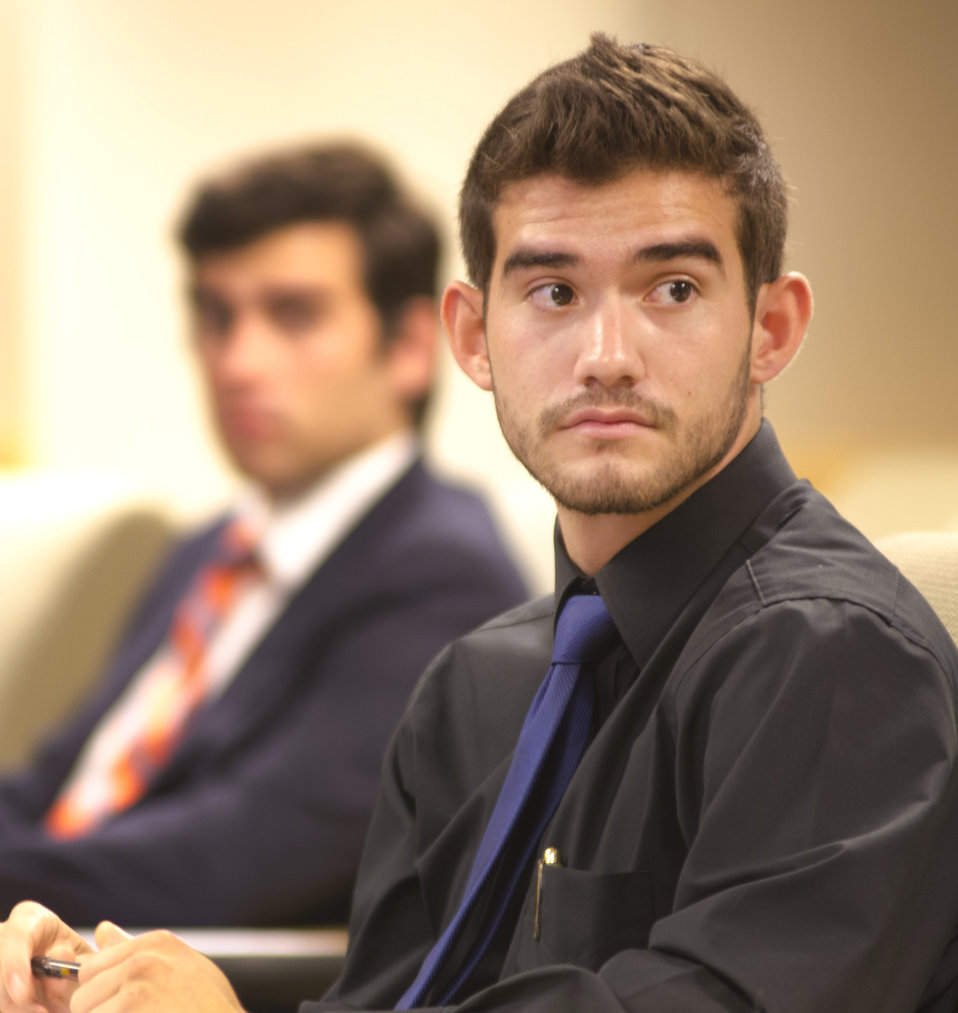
U.S. Department of Agriculture (USDA) Foreign Agricultural Service (FAS) intern Tyler Anderson (left), and USDA Food Nutrition Service (FNS) intern Marco Castanos listen to comments from another intern at the USDA Internship Program Listening Session held in USDA’s South Building in Washington, D.C. on Monday, August 7, 2012. The purpose of the USDA Internship Program Listening Session is to provide interns with a forum to express their views about their experiences as a USDA intern. These young people will be among the most promising future USDA leaders and participate in an individual discussion and group session that will develop leadership skills.